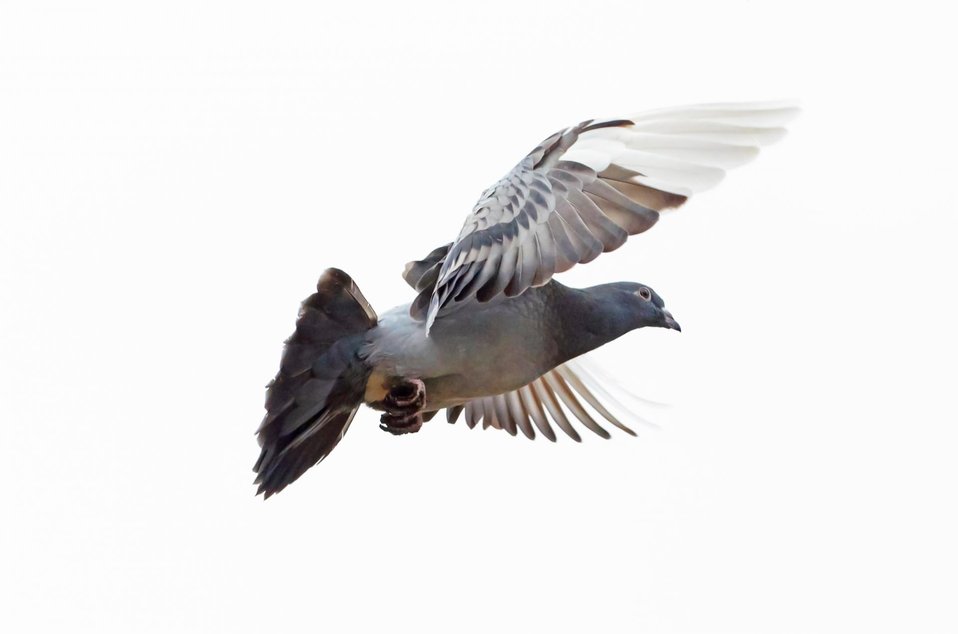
Pigeon on the white background.